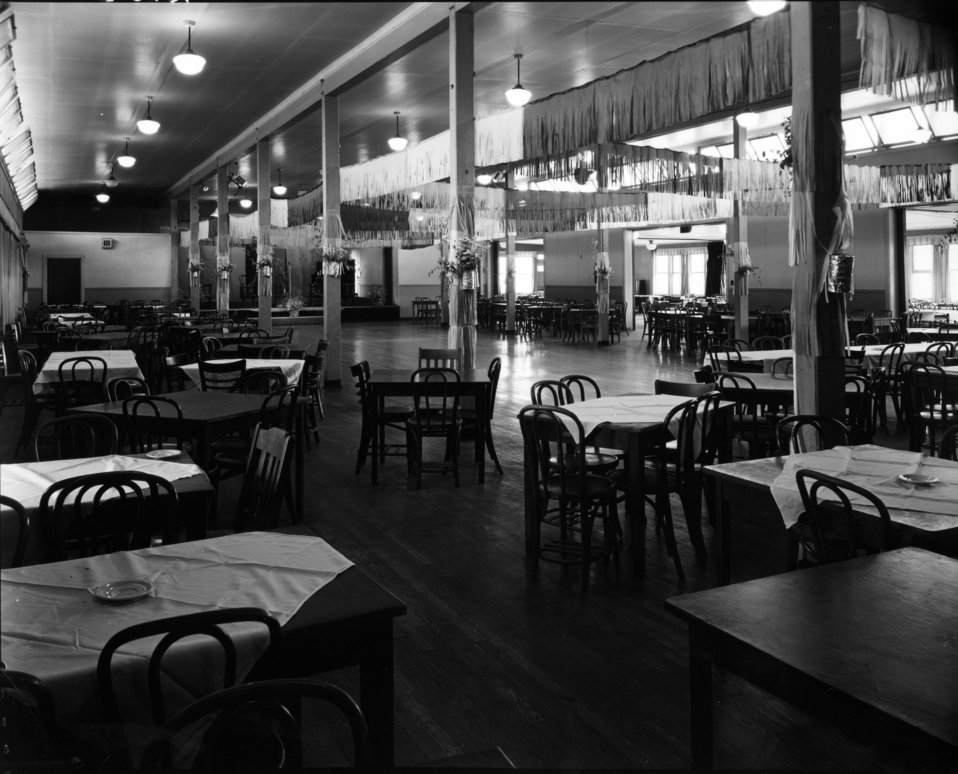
Schools at Oak Ridge